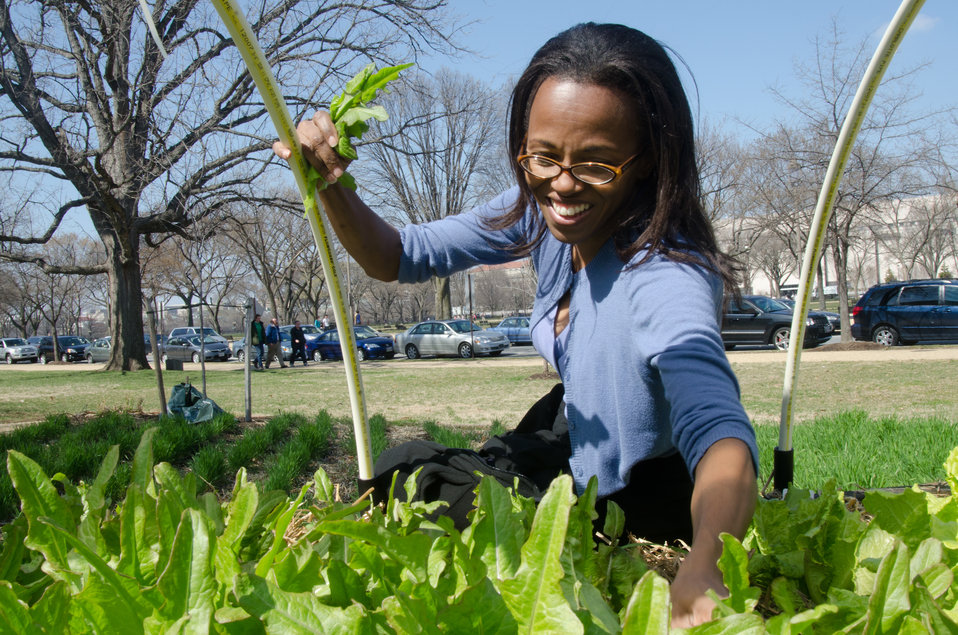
U.S. Department of Agriculture (USDA) Project Manager Leslie Burks harvests lettuce from The People's Garden at the Washington DC, on Thursday, March 17, 2011. Harvesting the largest leafs, allows the plant to continue to grow and can be harvested once a week. Volunteers pitch in several times a week, at various times of the day (before or after work hours, or during lunchtime) to weed, mulch, plant, water and what ever it takes to grow a wide variety of produce. Although a few are ornamental, most are destined for charity kitchens. Located on the corner of Jefferson Dr. SW and 12th St. SW, people often stop to ask questions about the garden. Part of the volunteers’ training is to be a spokes person for the People's Garden Initiative, an effort by the USDA that challenges its employees to establish People's Gardens at USDA facilities worldwide or help communities create gardens. People's Gardens vary in size and type, but all have a common purpose - to help the community they're within and the environment.